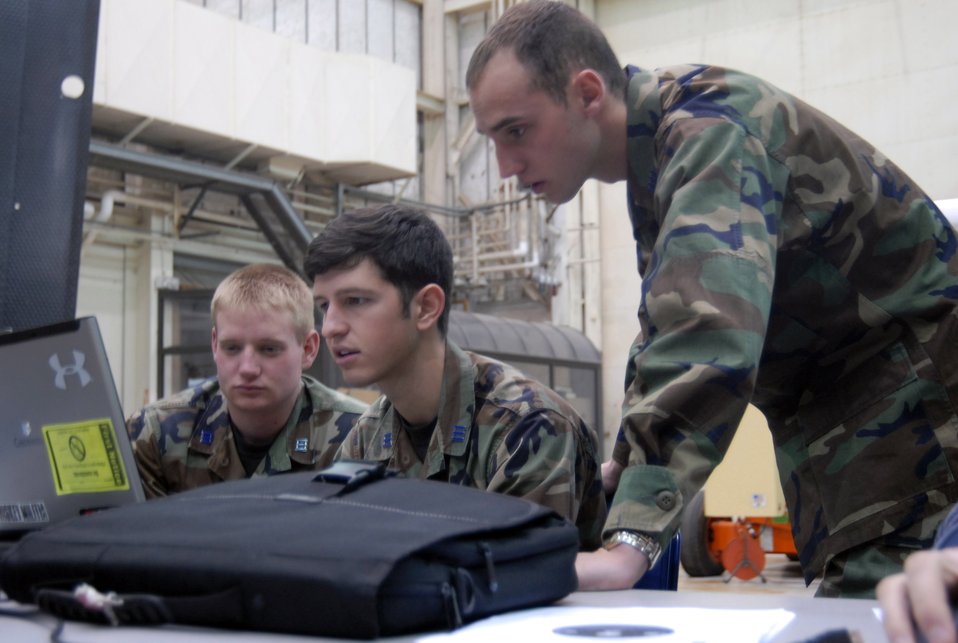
FalconSAT-5

U.S. Air Force Academy Cadets Matthew Knutson (from left), Joseph Ulisse and Bill Percoski study data from FalconSAT-5 tests at the Air Force Research Lab Jan. 21, 2010, at Edwards AFB, Calif.